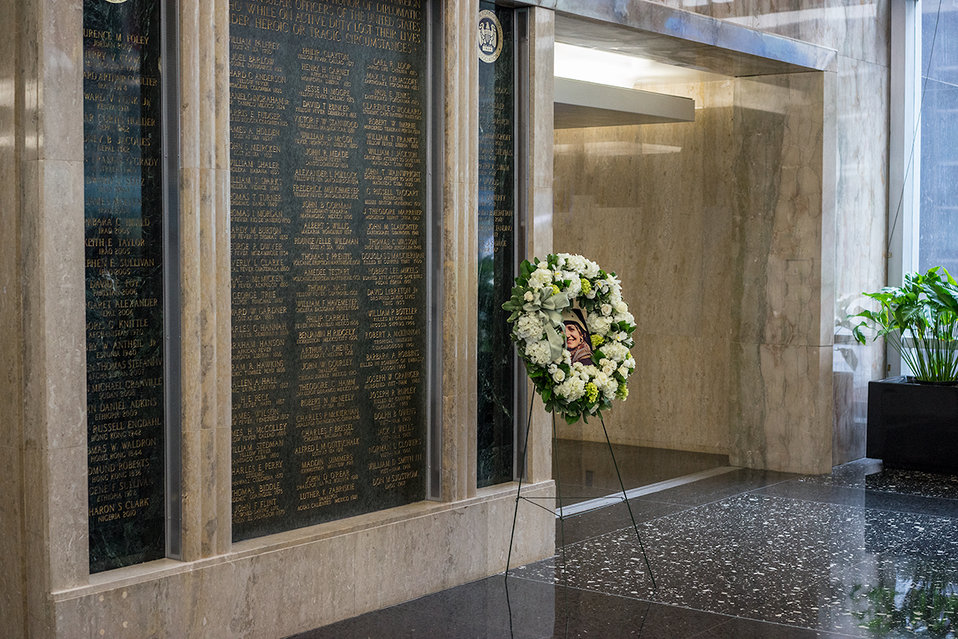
A Wreath is Dedicated in Honor of Anne Smedinghoff to Pay Tribute to her Service

A wreath dedicated in Anne Smedinghoff's honor is pictured before friends and family of Anne Smedinghoff gather to pay tribute to her service at the U.S. Department of State in Washington, D.C., on April 4, 2014. Smedinghoff was killed in the line of duty in Afghanistan on April 6, 2013.